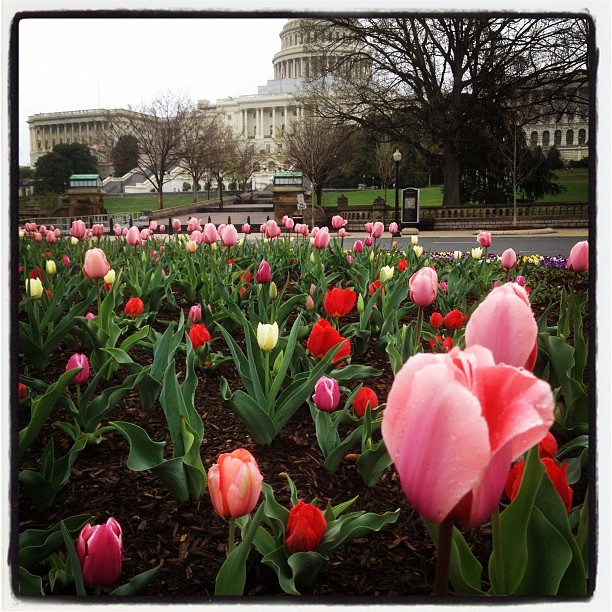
Welcome to first official day of spring, tulips at Capitol got early jump.